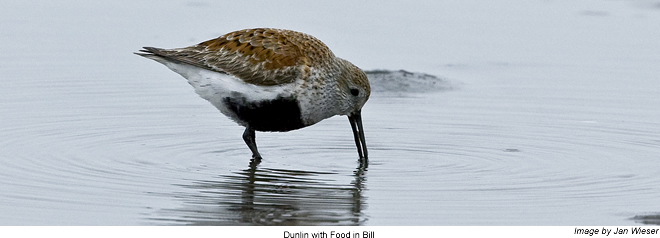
Dunlin Shorebird - Grays Harbor National Wildlife Refuge

Dulin shorebirds are common in Grays Harbor National Monument along the western shores of Washington State.